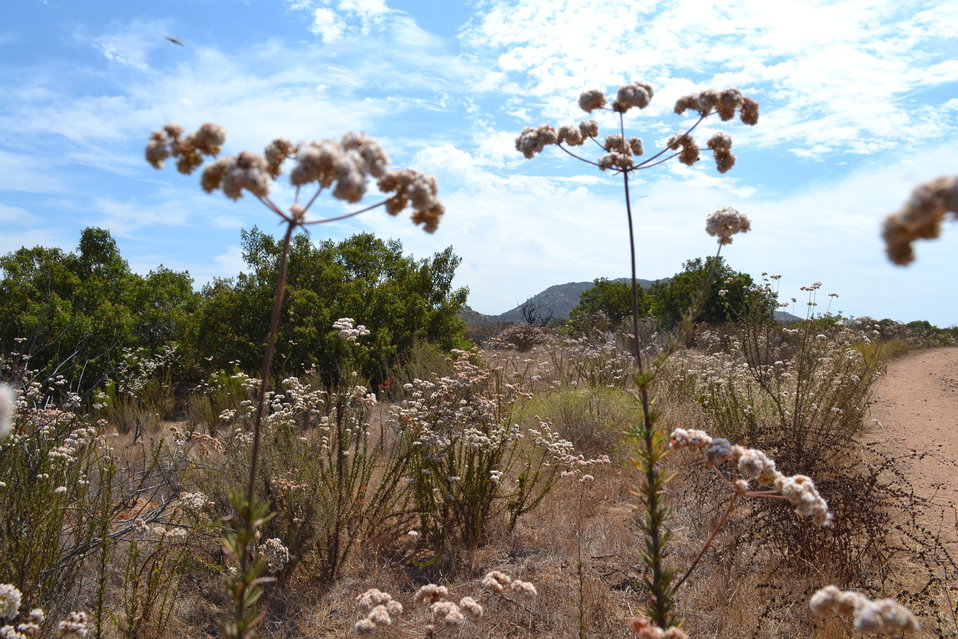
Hidden Valley Ribbon Cutting

(USFWS)